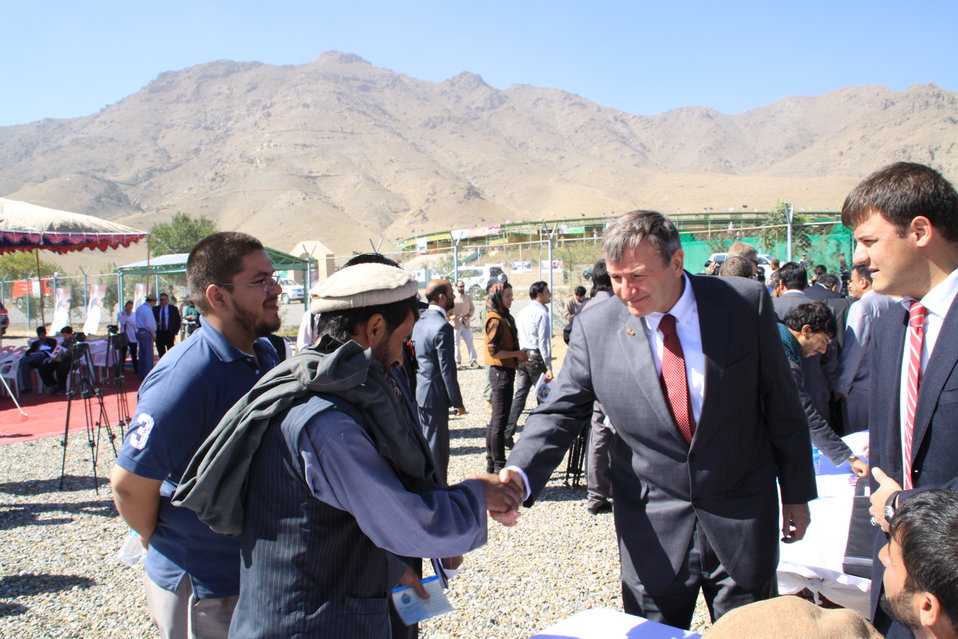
AVIPA Plus Wheat Seed Distribution 101005

US Ambassador Karl Eikenberry and USAID Acting Mission Director Kevin Brownawell joined the Minister of Agriculture, Irrigation and Livestock, H.E. Minister Mohammed Rahimi in signing a Memorandum of Understanding and distributing vouchers to area farmers for wheat and fertilizer.

US Ambassador Karl Eikenberry and USAID Acting Mission Director Kevin Brownawell joined the Minister of Agriculture, Irrigation and Livestock, H.E. Minister Mohammed Rahimi in signing a Memorandum of Understanding and distributing vouchers to area farmers for wheat and fertilizer.